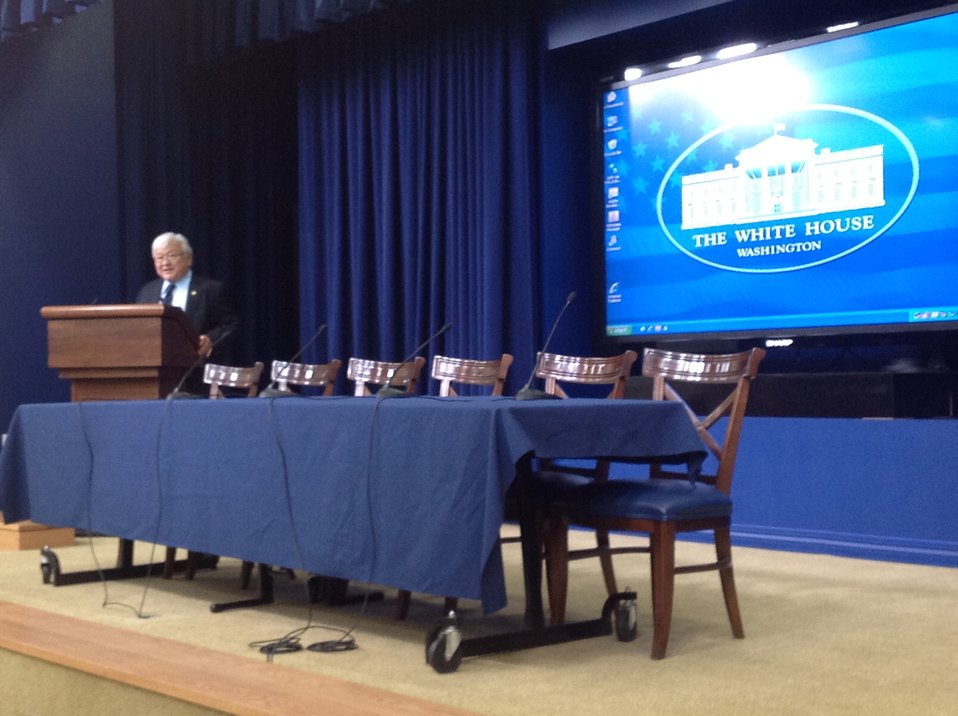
Rep. Mike Honda

WH 2012 World Hepatitis Day Event